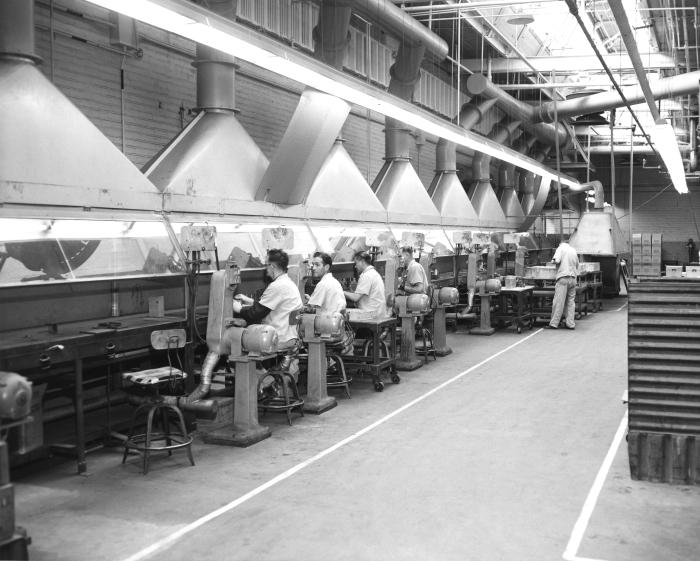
This historical photograph was provided by the Center for Disease Control's (CDC), National Institute for Occupational Safety and Health (NIOSH). It depicted five Baltimore, Maryland, Crown Cork Co. industrial workers inside a factory, four of whom were seated at workstations, which were ventilated by way of overhead units. If, indeed, their immediate areas were cleansed, the outer atmosphere hopefully was being filtered as well, though this is unknown from this image. The men were not wearing filtered breathing masks, nor were they wearing protective goggles. It cannot be determined if gloves were being worn.